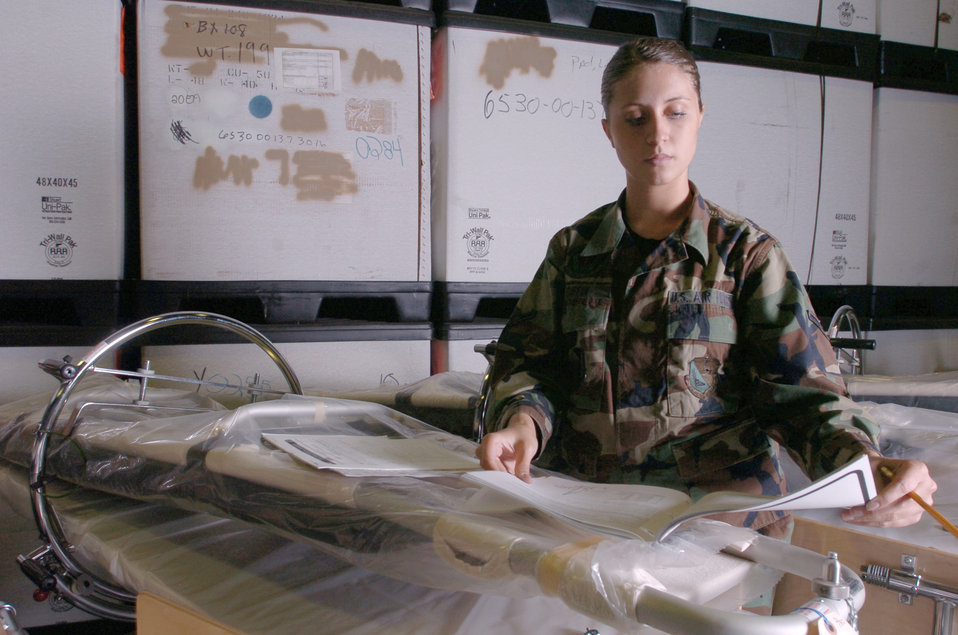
Bed check

YOKOTA AIR BASE, Japan -- Airman Camille Giffin inventories a row of turn frame orthopedic beds here during routine inspection. The beds are used to stabilize patients with back injuries. Airmen from the logistics flight here store, maintain and deploy about $12 million worth of medical war reserve materiel for servicemembers from the 374th Airlift Wing, 5th Air Force and U.S. Forces Japan. Airman Giffin is a medical logistics technician with the 374th Medical Group.